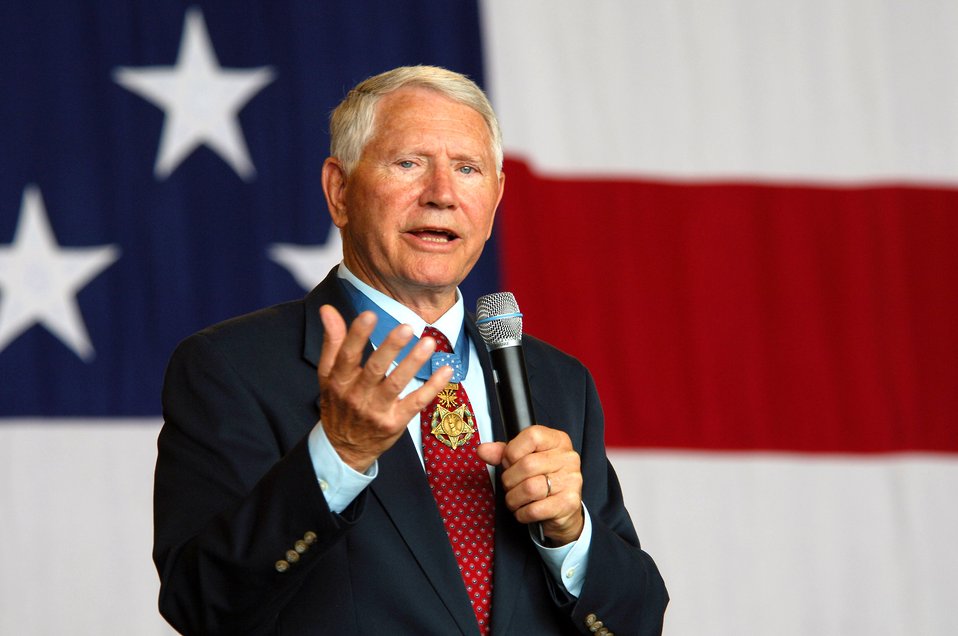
Command celebrates Air Force's 60th Anniversary

Retired Lt. Col. Leo Thorsness speaks at the U.S. Air Forces in Europe's Air Force 60th Anniversary celebration Aug. 11 Ramstein Air Base, Germany. Colonel Thorsness is a Medal of Honor recipient.